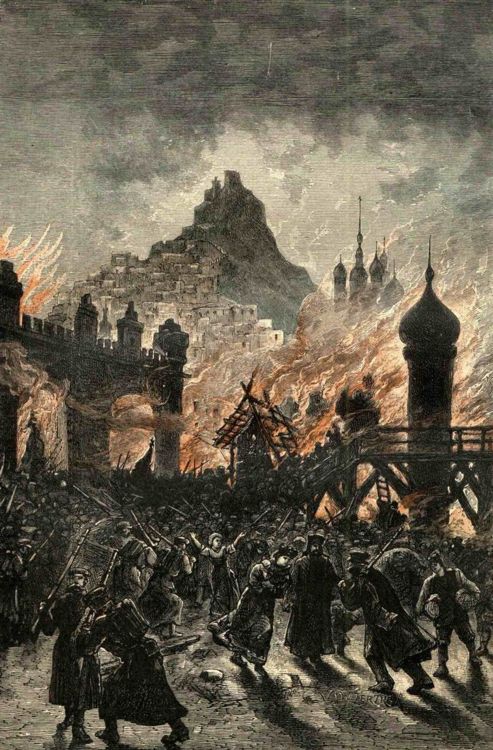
An illustration from the novel 'Michael Strogoff: The Courier of the Czar' by Jules Verne drawn by Jules F√©rat. Polski: Ilustracja powie≈õci Juliusza Verne'a 'Micha≈Ç Strogow, kurier carski' autorstwa Julesa F√©rata. Fran√ßais†: 'Michel Strogoff. Le courier du tzar', Jules F√©rat. Fran√ßais†: Une immense clart√© dissipa les ombres de la nuit.